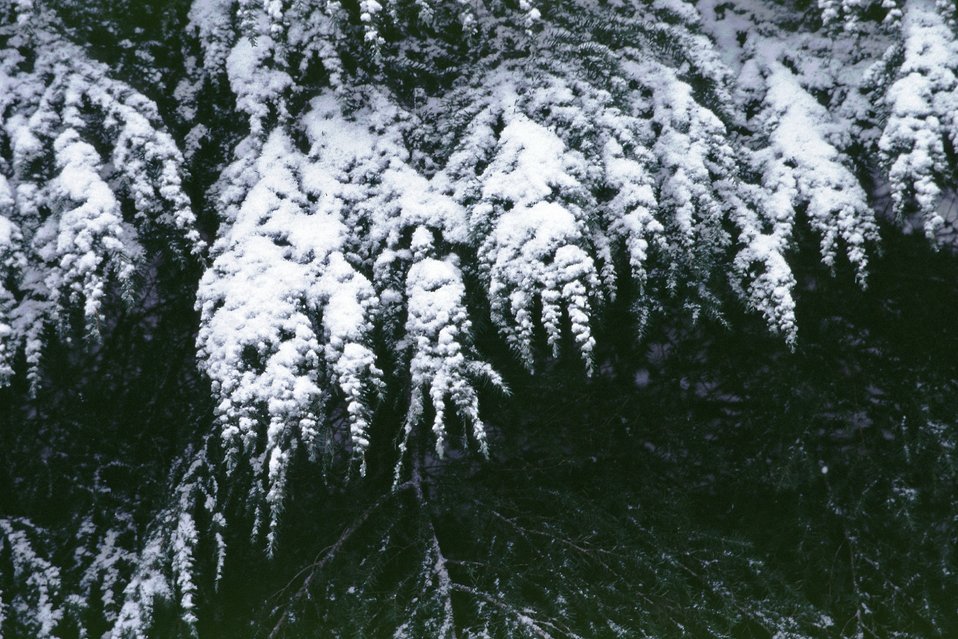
Mid Winter forest scene in the Mollala Corridor.